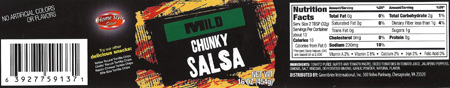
RECALLED – Salsa

July 22, 2013 – Product Recall – Olam Tomato Processors, Inc. Announces Voluntary Recall of Mild and Medium Chunky Salsa Because It May Contain Large Glass Pieces.